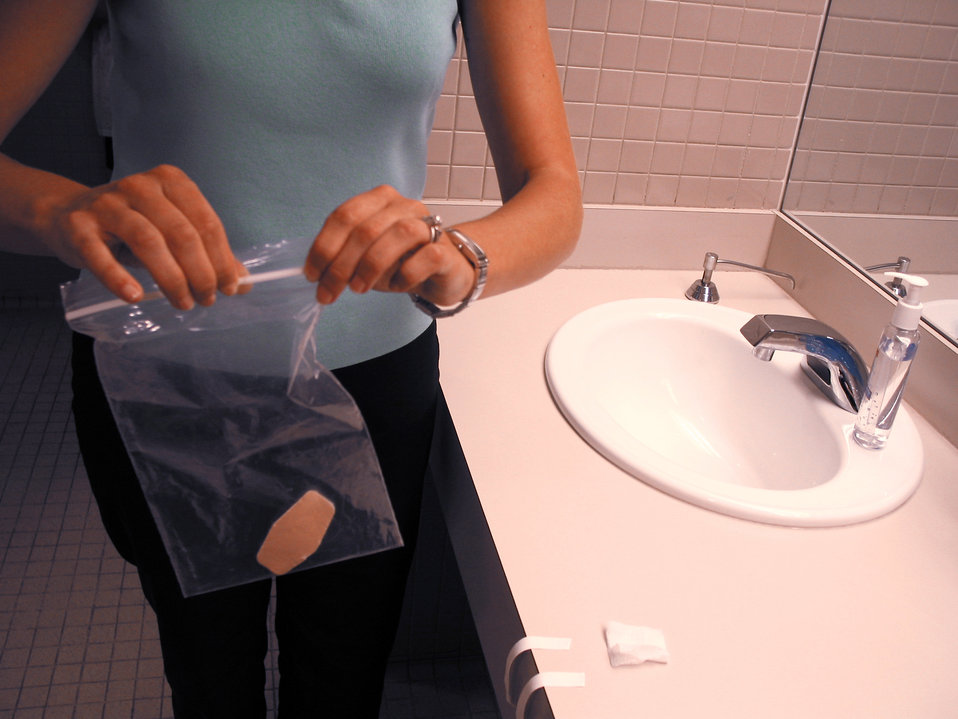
This smallpox vaccinee is shown here placing a contaminated waterproof bandage into a sealable plastic bag.